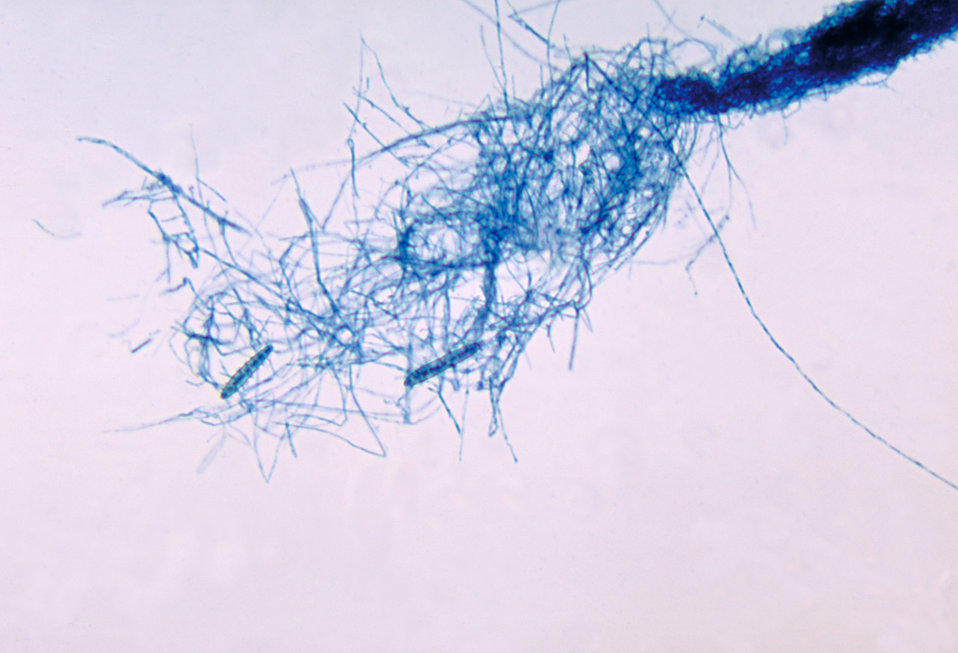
This is a photomicrograph of the fungus Microsporum cookei using the lactophenol cotton blue staining technique.